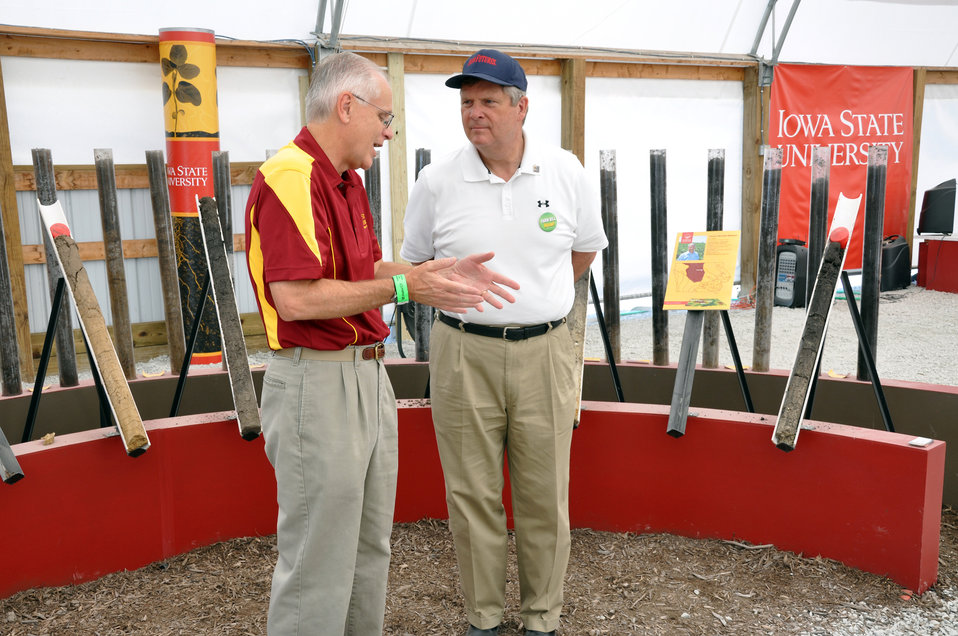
Iowa State University Soil Science Professor Lee Burris talks to Agriculture Secretary Tom Vilsack about Iowa's various soil types during the 2012 Farm Progress Show in Boone, Iowa, on Aug. 30, 2012.